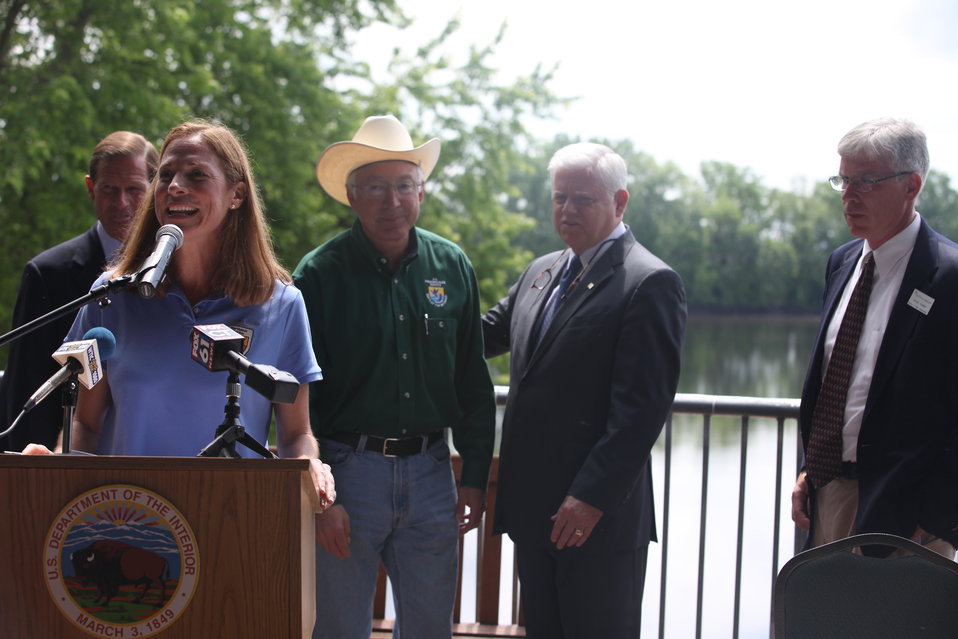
RD Wendi Weber at podium

U.S. Fish & Wildlife Service, Northeast Regional Director Wendi Weber speaks at the signing event.